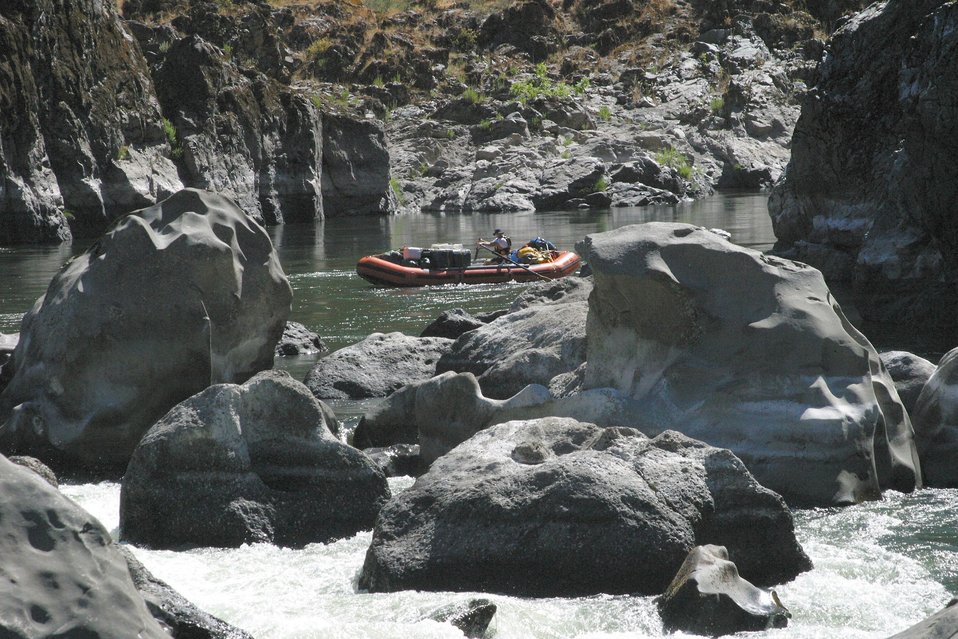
Boaters negotiate Blossom Rapids.